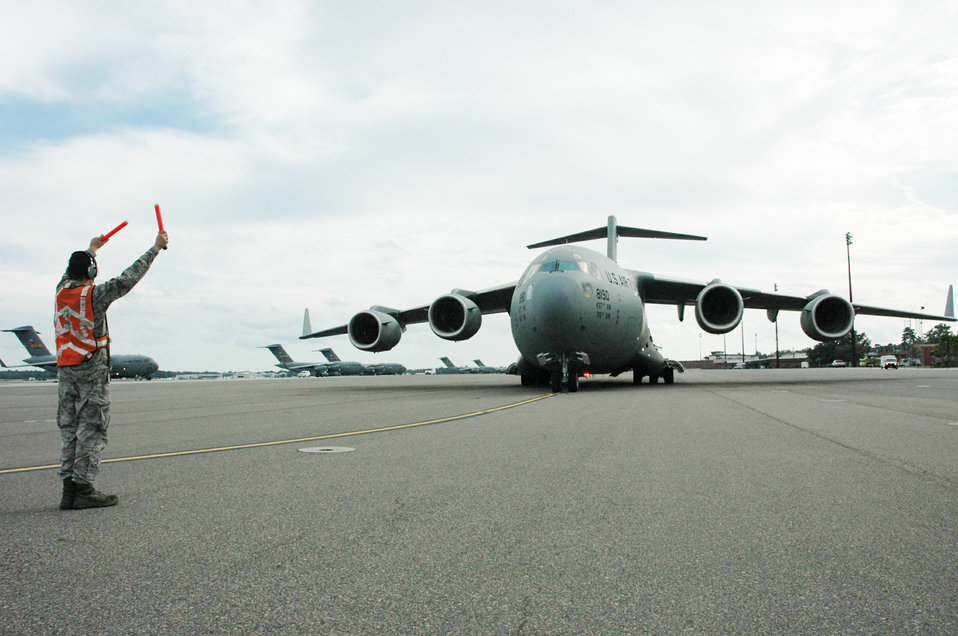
Reserve Command general delivers latest C-17

The Air Force's newest C-17 Globemaster III arrives Oct. 28, 2009, at Charleston Air Force Base, S.C. Lt. Gen. Charles E. Stenner Jr., the commander of Air Force Reserve Command, accompanied by an all-Reserve crew from the 317th Airlift Squadron presented a ceremonial key to Col. Steven Chapman, the 315th Airlift Wing commander, on the flightline here, commemorating the Air Force receiving the 190th C-17 and the 58th aircraft at Charleston AFB.